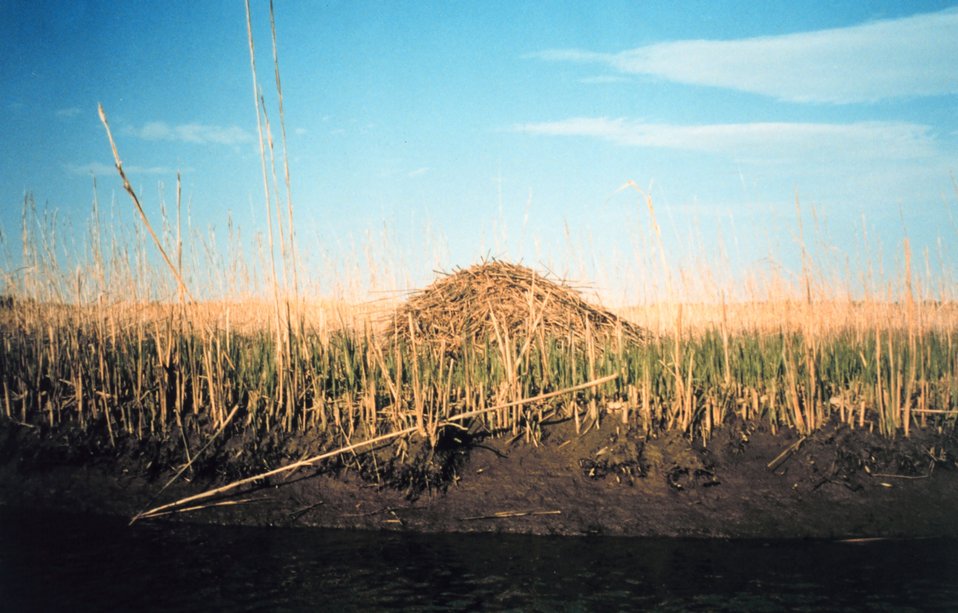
A muskrat hut in a middle Patuxent river marsh. Observed at a very low tide. Early in the year so marsh grasses aren't too tall yet.